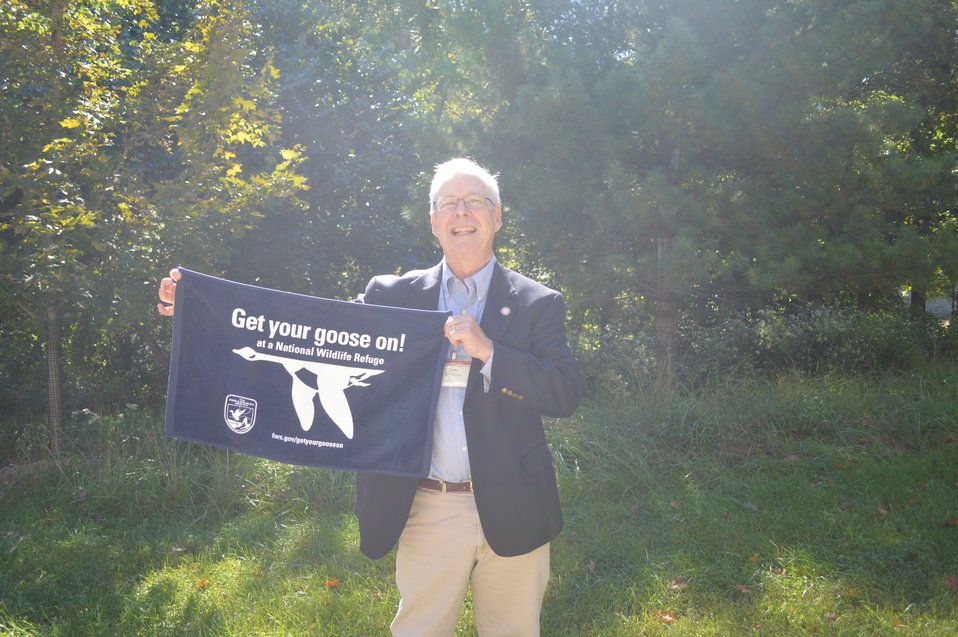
Get Your Goose On!

Photo taken at the National Conservation Training Center in Shepherdstown, WV.

Credit: Ryan Moehring / USFWS

#GetYourGooseOn